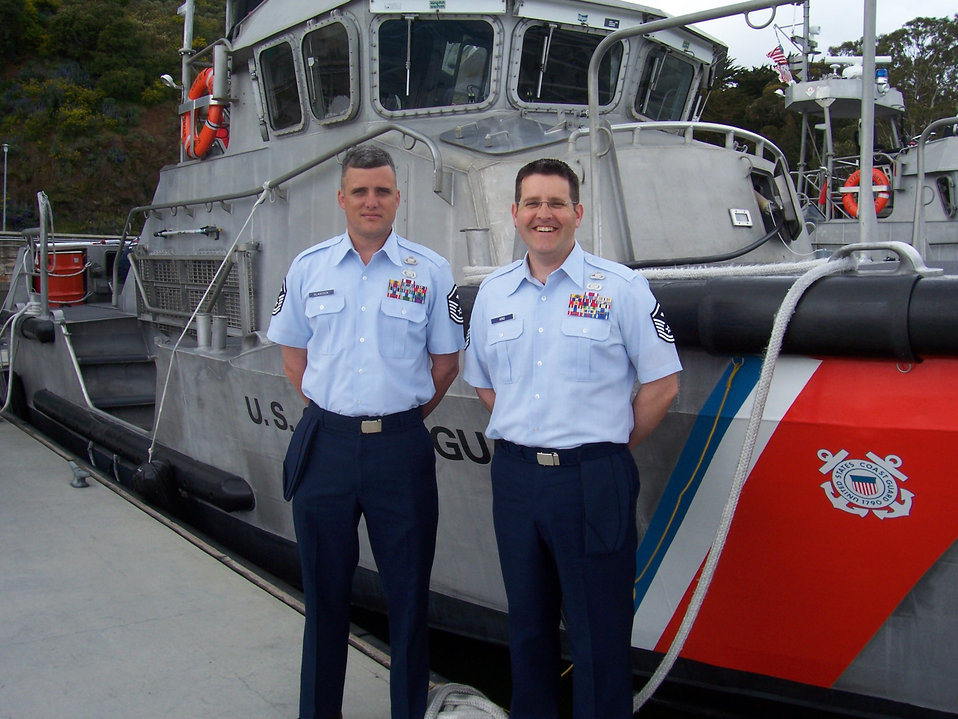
Airmen sail into Coast Guard Academy

Master Sgts Chance Glascock and Christopher King stand in front of a Coast Guard boat in Petaluma, Calif. Both Aviano Air Base, Italy, first sergeants recently had the opportunity to attend the U.S. Coast Guard Chief Petty Officer Academy. The advanced training is offered to only 40 Air Force senior NCOs a year.